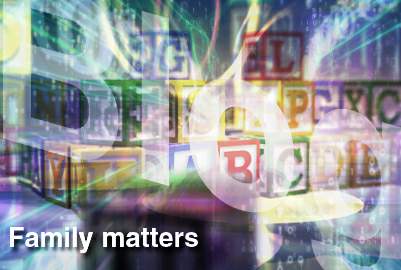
Blog offers support to military families

Defense Department officials have launched a blog called